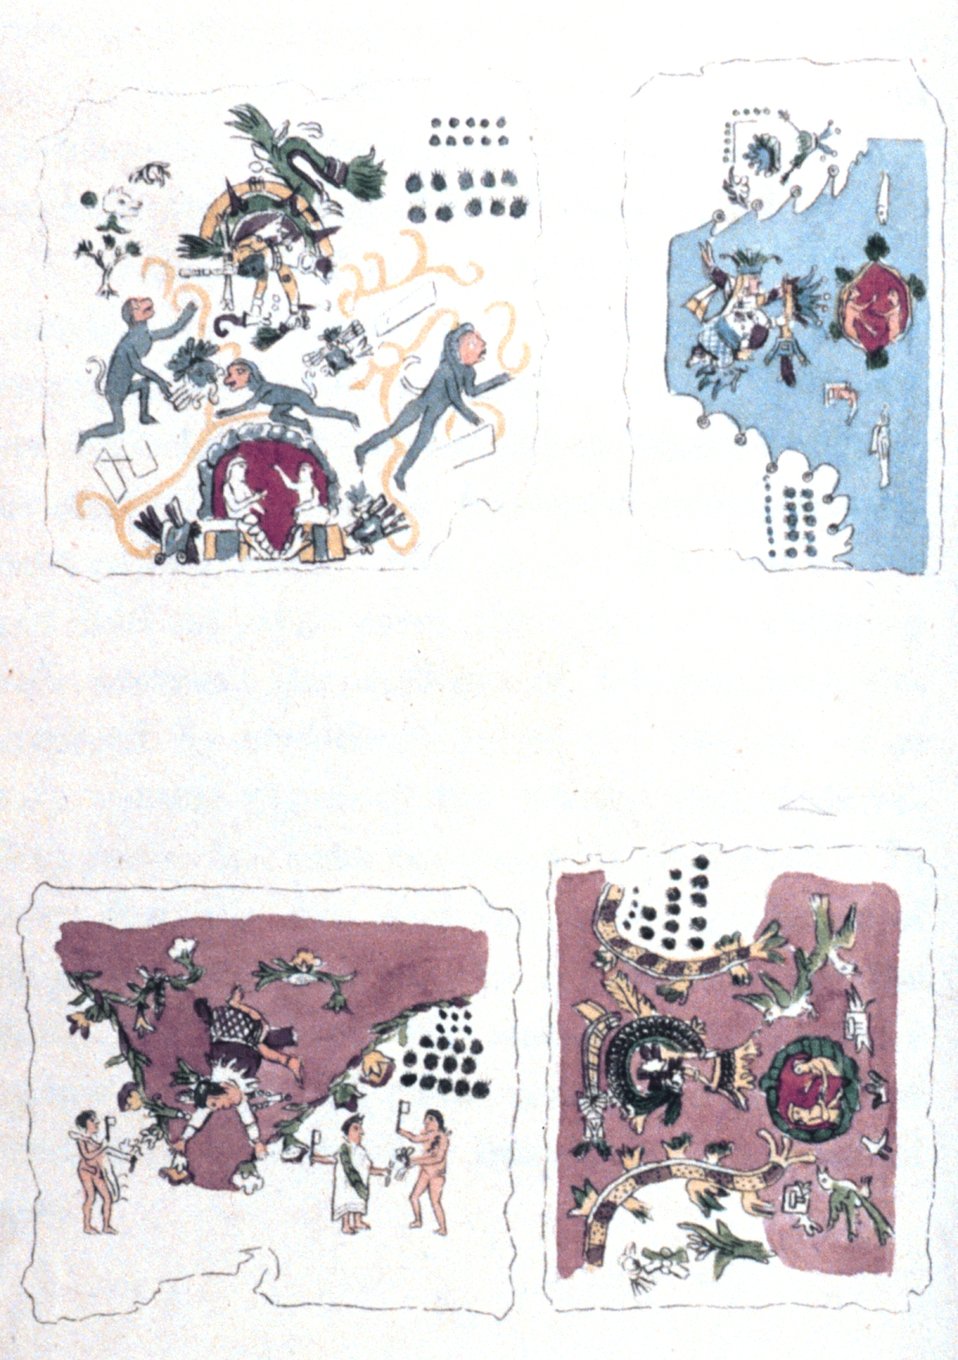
'Epochs of Nature According to Azteck Mythology' in: 'Researches Concerning the Institutions and Monuments of the Ancient Inhabitants of America,' by Alexander von Humboldt and translated by Helen Maria Williams, 1814. Vol. II, p. 15. Library Call Number C/gLH919.